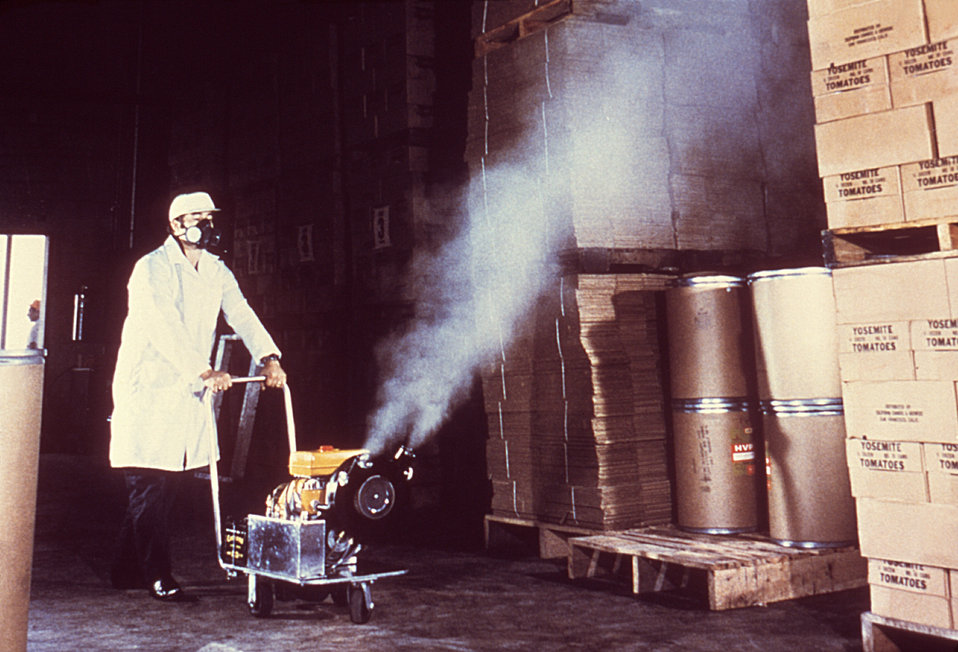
This field technician was using a Micro-GenTM ultra-low volume (ULV) hand-held fog generator in an attempt to control populations of potential disease vectors by disseminating an insecticide fog into their warehouse habitat.